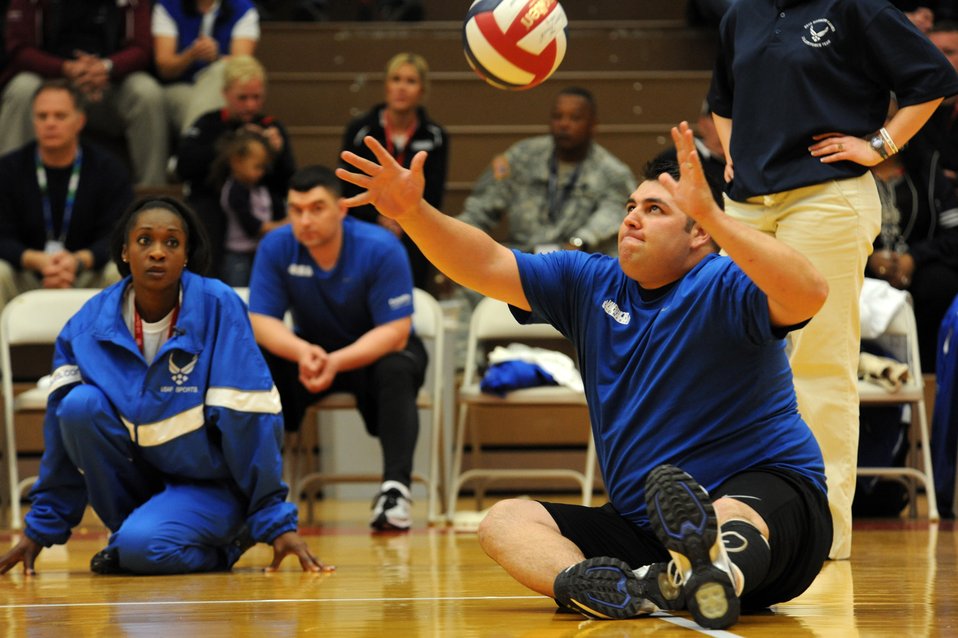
AF Volleyball wins Bronze at Warrior Games

Air Force Warrior Games athlete, Ricky Tackett, prepares to serve the ball during the Warrior Games sitting volleyball match against Army at the U.S. Olympic Training Center in Colorado Springs, Colo., May 13, 2010.